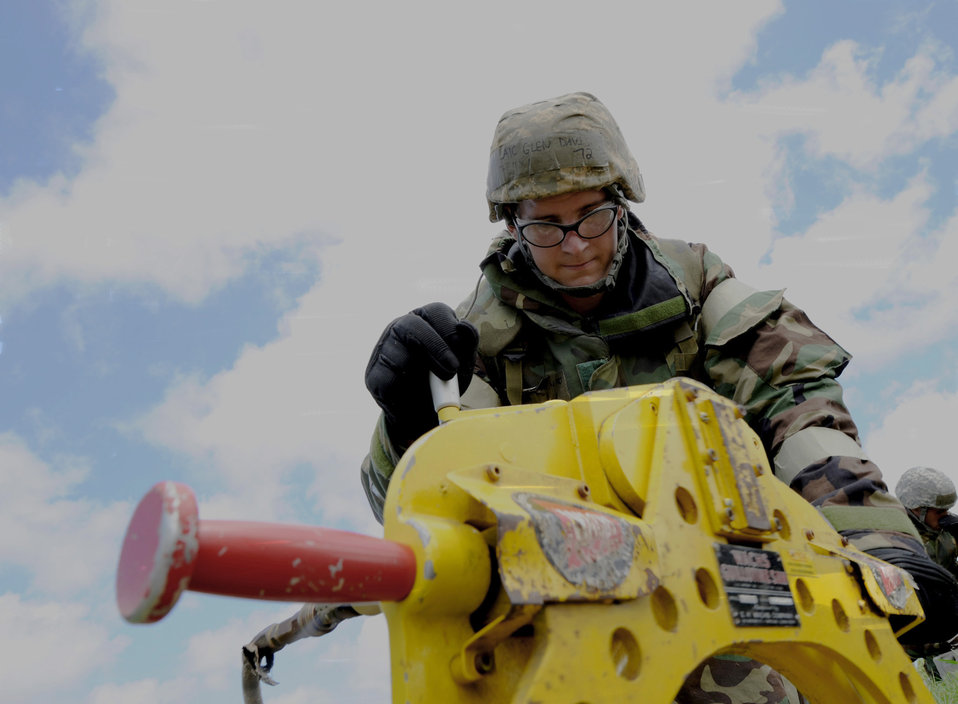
A cut above

Airman 1st Class Glen Davis uses a piping saw to cut a broken pipeline June 28, 2011, during a Silver Flag exercise at Kadena Air Base. Davis is a water and fuel maintenance apprentice assigned to the18th Civil Engineer Squadron.